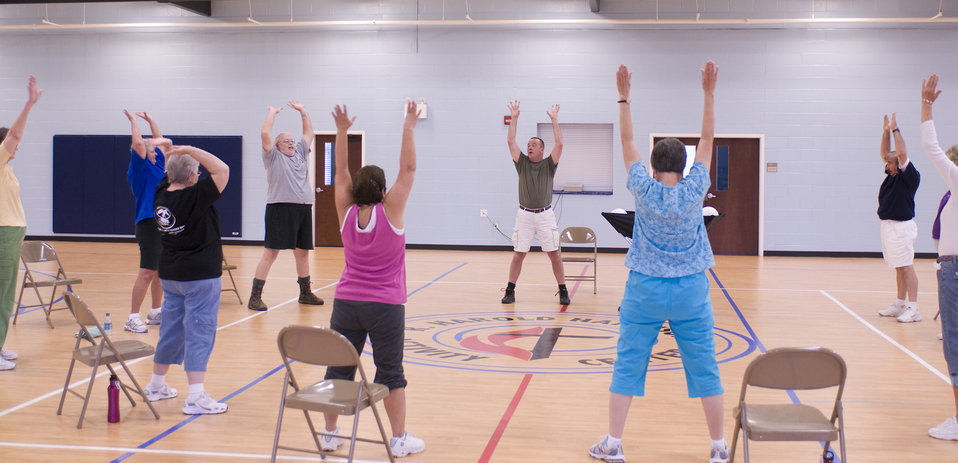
The older individuals pictured here on the wooden floor of an indoor basketball court, were participating in an exercise class consisting of stretching, and aerobic repetitive motion movements. In this particular view, the group members were stretching their torso muscles, and working the muscles of their shoulders by raising their outstretched arms over their head.